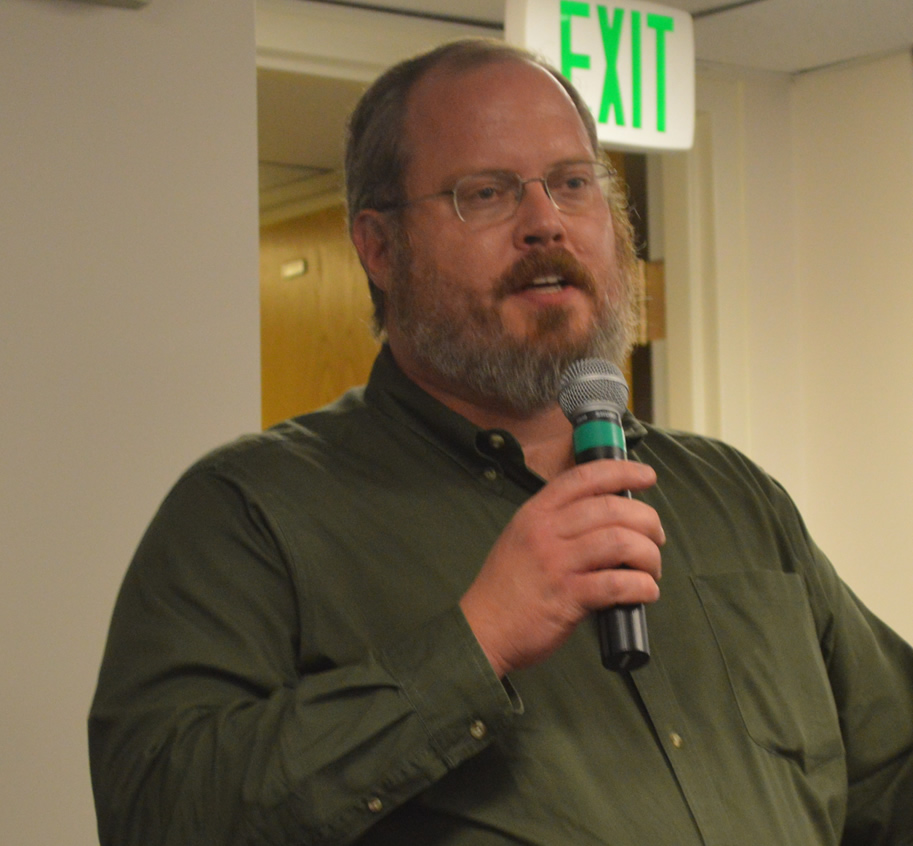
Regional Director Steve Guertin Moves on to Senior Leadership Position

On November 1, 2012, USFWS Mountain-Prairie Regional Director, Steve Guertin, served his last day as Regional Director before moving on to a senior leadership position at Headquarters.

Regional leadership and partners shared their memories of Steve's outstanding leadership and his unique ability to leverage his outstanding technical skills while maintaining a very personable persona - all amidst a variety of challenging issues.